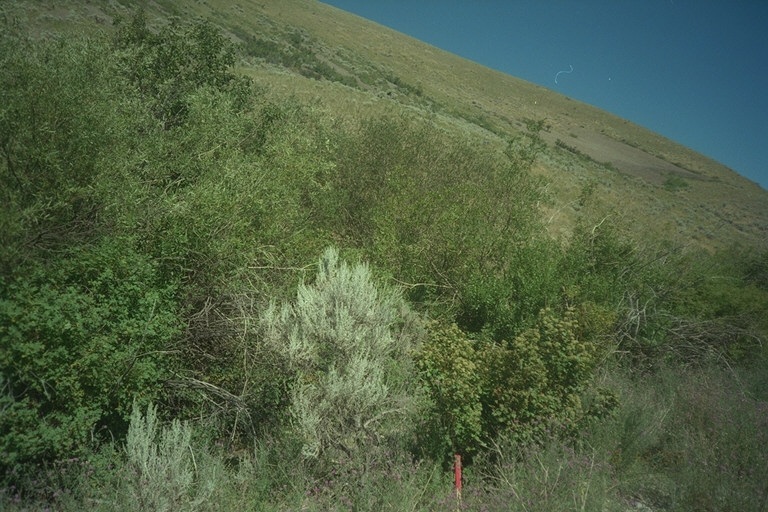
Riparian area Public Lands Salmon Field Office UCSC Upper Columbia Salmon Clearwater District